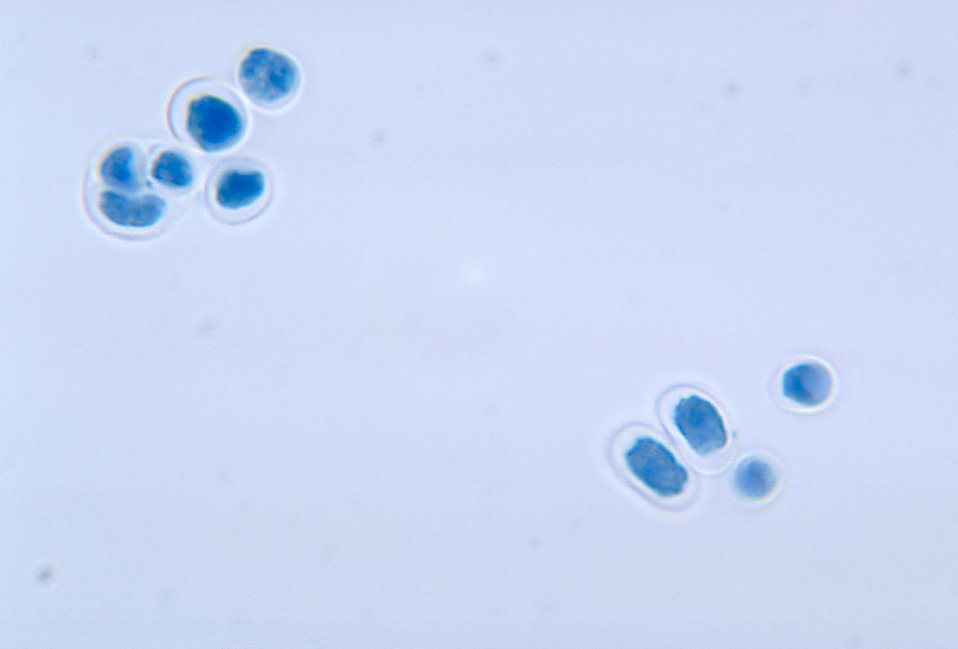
This photomicrograph confirms the presence of Prototheca moriformis, an achlorophyllic algae.